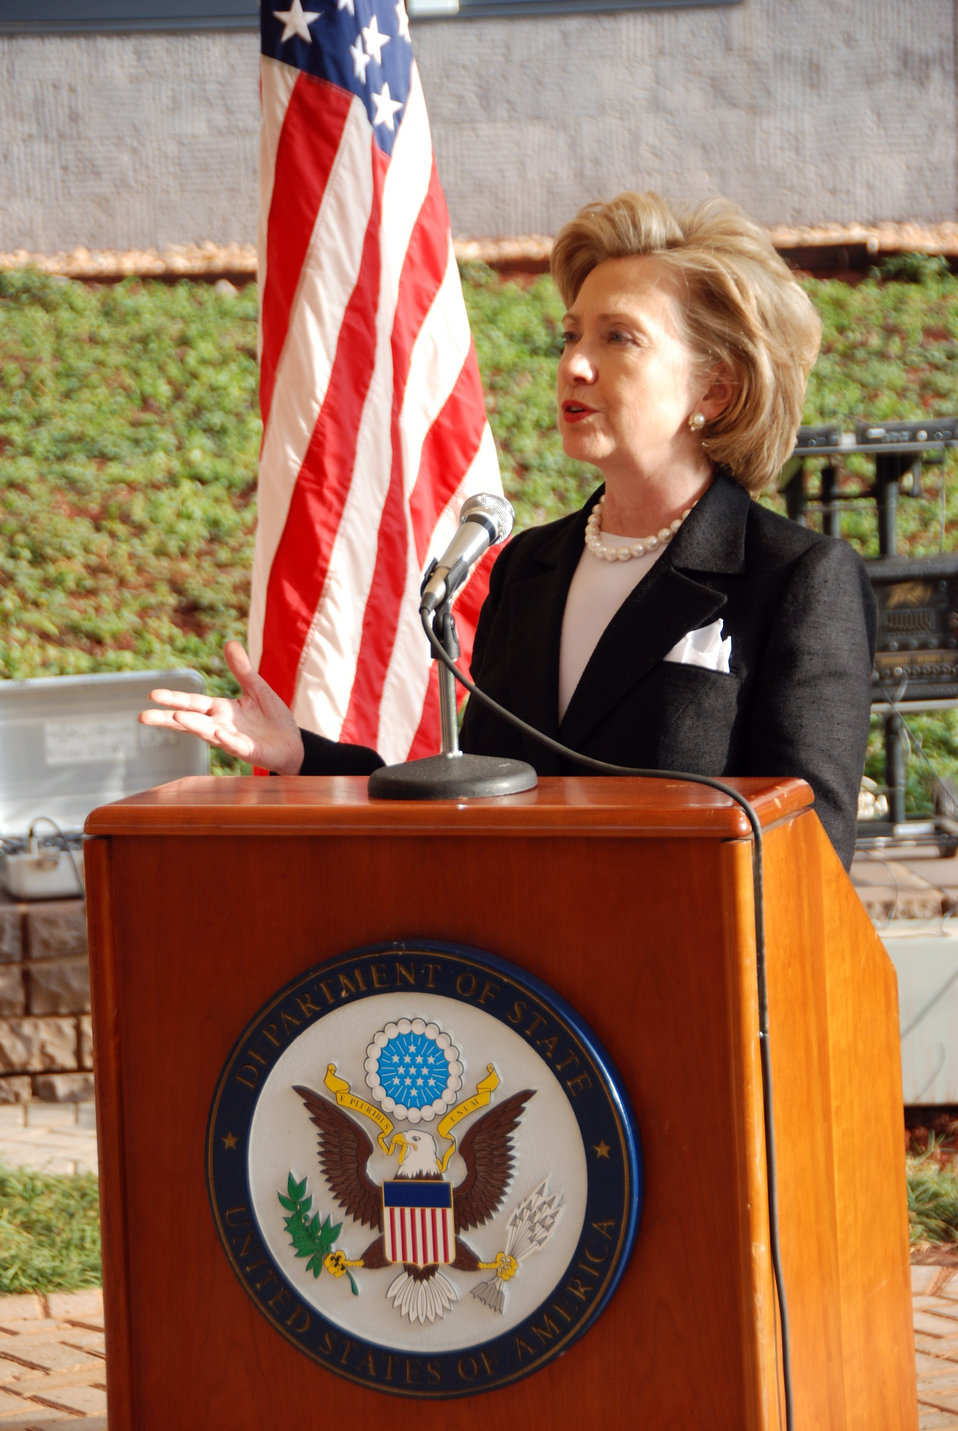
Secretary Clinton Addresses U.S. Embassy Staff in Kenya

U.S. Secretary of State Hillary Rodham Clinton addresses U.S. Embassy employees in Nairobi, Kenya August 6, 2009.